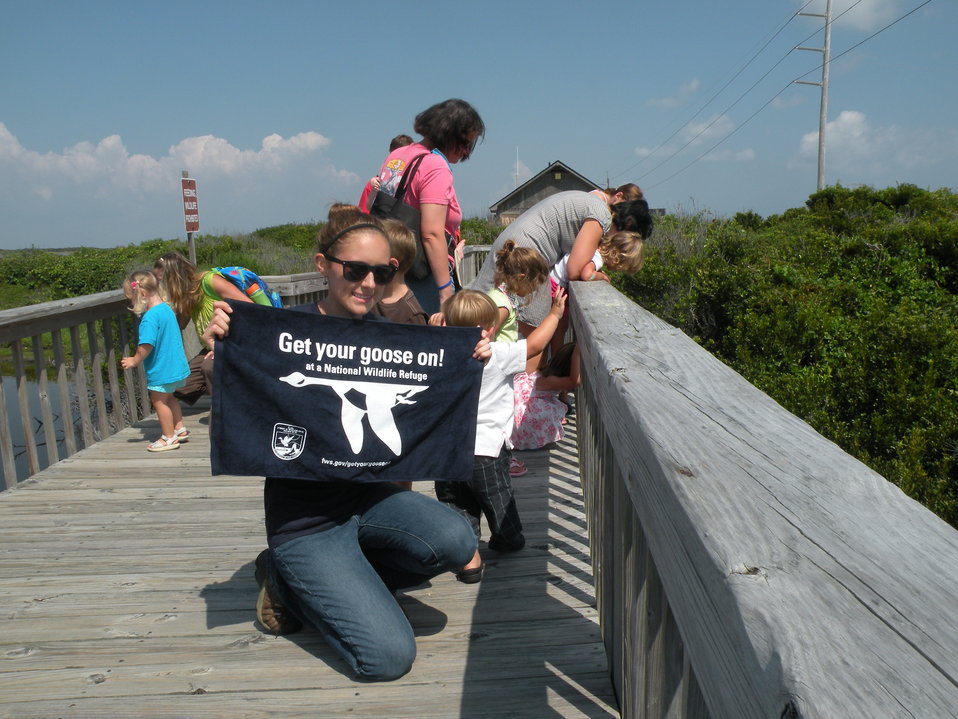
Get Your Goose On!

Outer Banks Mommy and Me group enjoy learning about turtles and Get there Goose on!

Cindy Heffley/USFWS